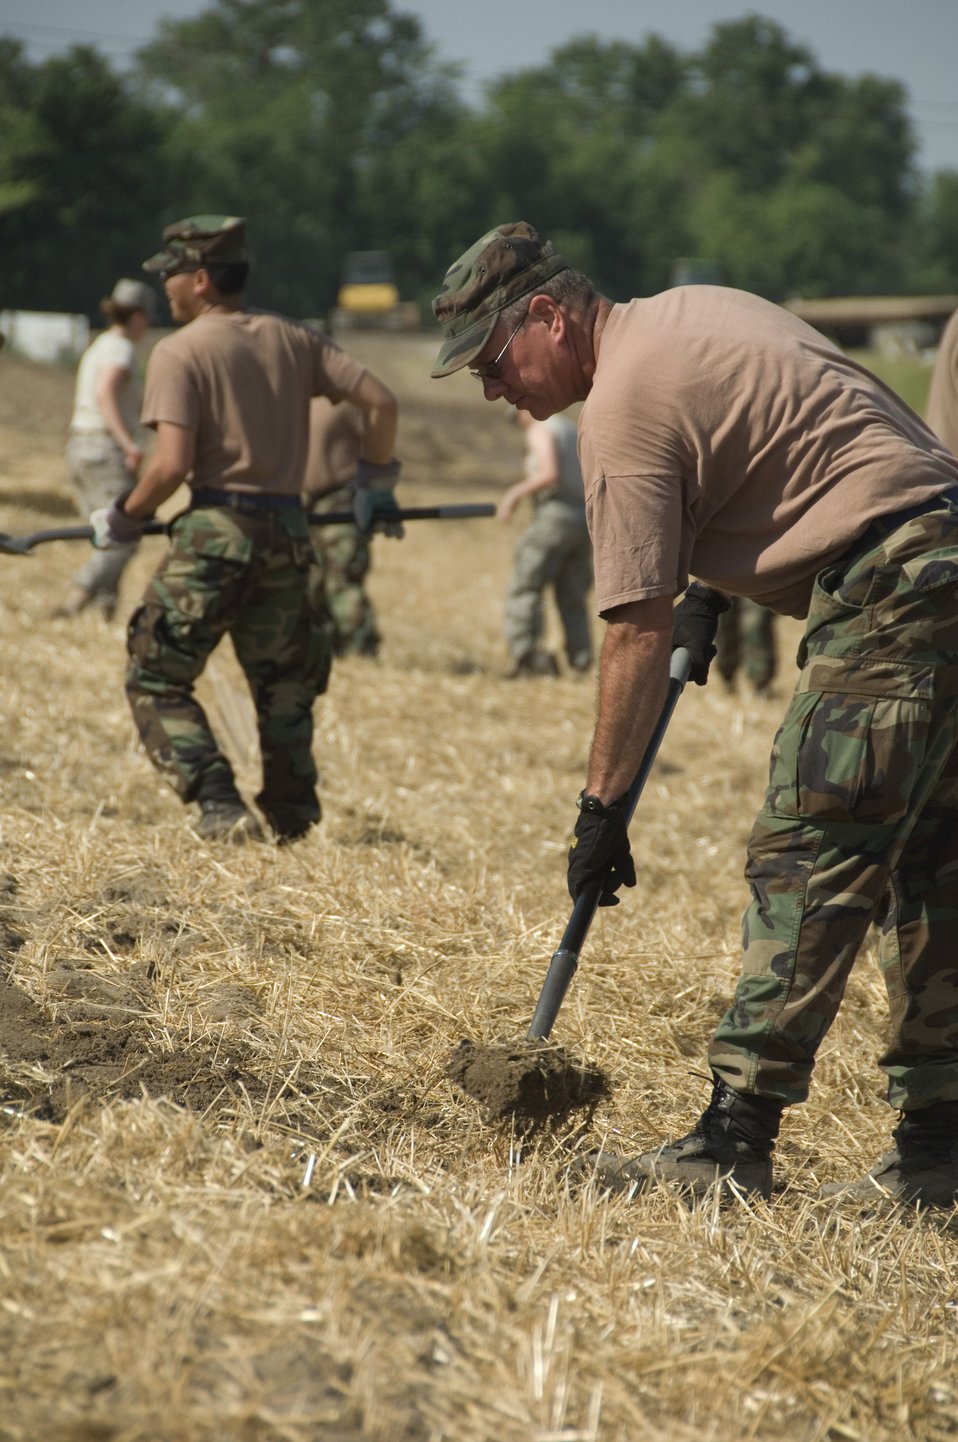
Air Guard prevents erosion

Tech. Sgt. Robert Phipps shovels sand on to hay that has been laid down to prevent erosion along a levee June 18 near the Mississippi River in Burlington, Iowa. Record rain has caused extensive flooding in Iowa and threatened low-lying towns and farmland. Sergeant Phipps is assigned to the Iowa Air National Guard's 185th Transportation Squadron in Sioux City, Iowa.